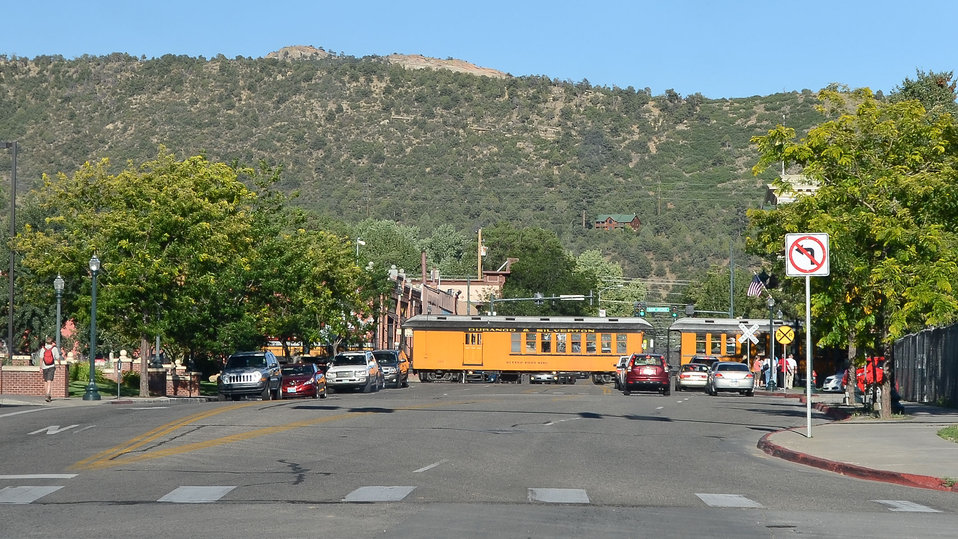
Durango, Colorado is in a historic mining area; now a destination location featuring the Durango & Silverton Narrow Gauge Railroad depot and other economic providers. Natural resources surround the area. It is home to more than 17,000 people.